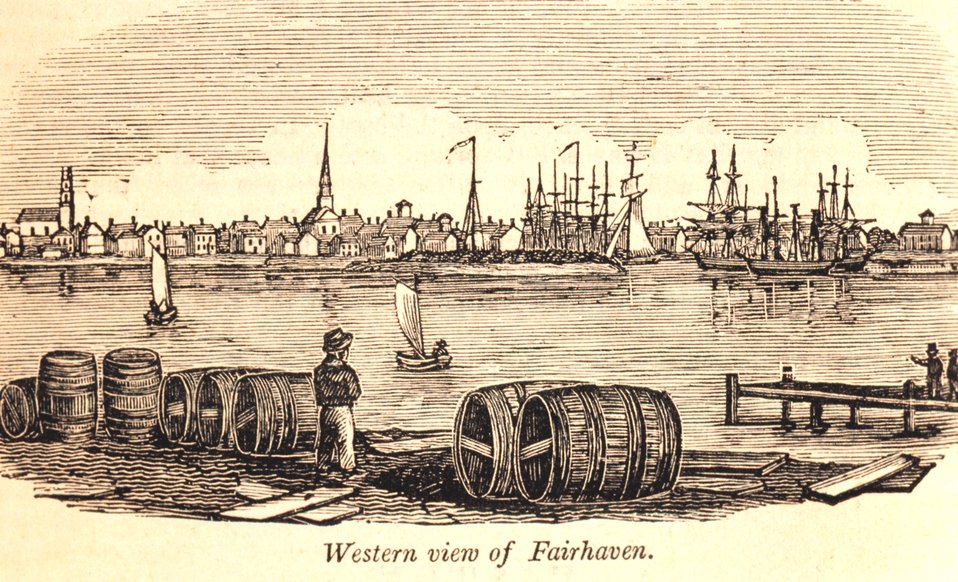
A western view of Fairhaven as seen from New Bedford. In: Historical Collections ... of Every Town in Massachusetts. 1841.